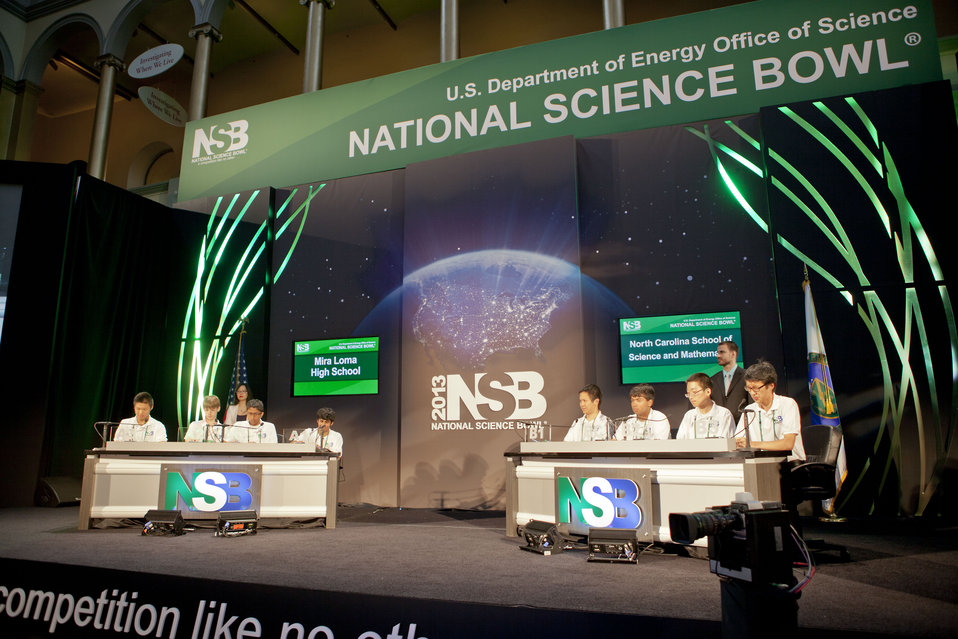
National Science Bowl 2013

Mira Loma High School's Daniel Shen, Jacob Gurev, Saaket Agrawal and Siddharth Trehan competed against North Carolina School of Science and Mathematics's Calvin Deng, Tejas Sudaresan, Sammy Luo and Yu Wang at the 2013 National Science Bowl. Final rounds took place at the National Building Museum, Monday, April 29, 2013, in Washington, DC.

California's Mira Loma High School won first place, and North Carolina's School of Science and Mathematics placed second overall.